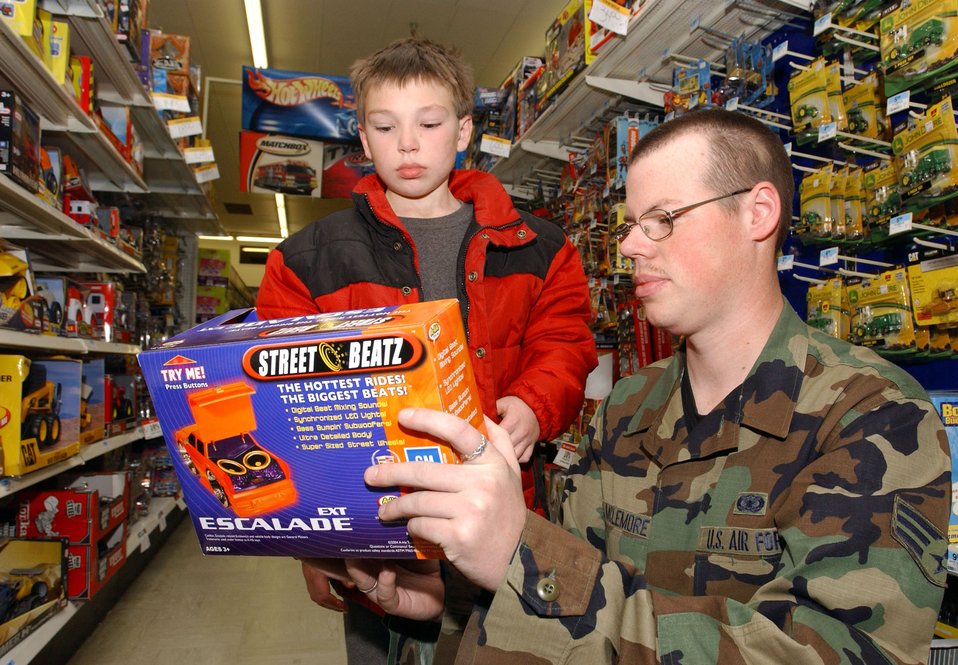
Shop with a cop

MINOT AIR FORCE BASE, N.D. -- Senior Airman John McLemore Christmas shops with Jeffery Dunn, a local youth as part of the base's annual